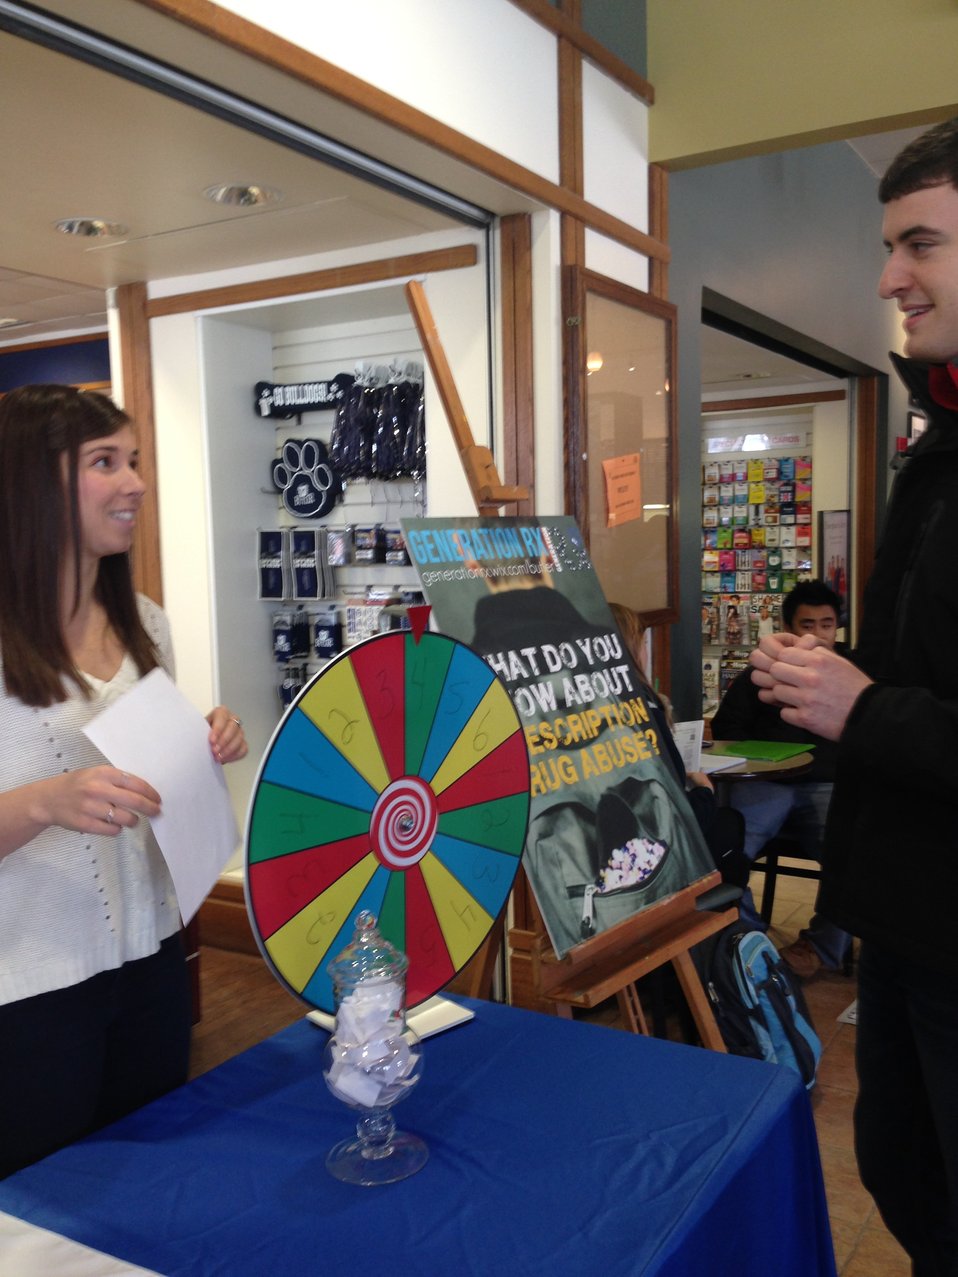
NDFW 2014 BU Style!

Students from Butler University Generation Rx hold their 2014 NDFW Event in Indianapolis, IN.